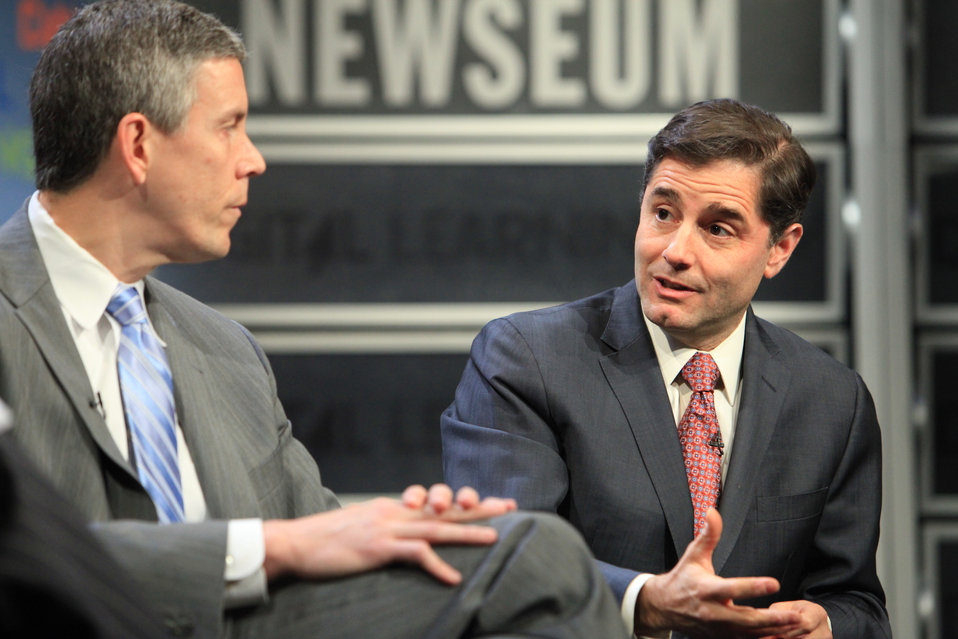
FCC Chairman Genachowski Speaks at Digital Learning Day Town Hall

FCC Chairman Genachowski speaks at the first-ever Digital Learning Day Town Hall with U.S. Department of Education Secretary Arne Duncan in Washington, DC, on February 1, 2012.